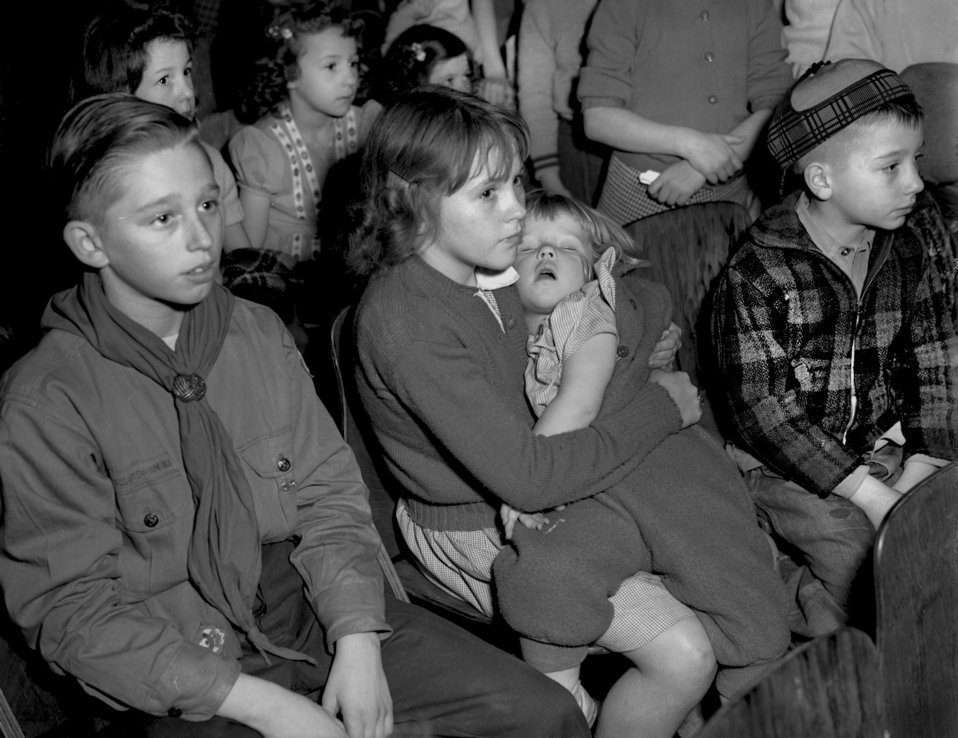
Doll Show Highland View School Oak Ridge

3235-4a DOE photo by Ed Westcott 1-10-1947 Oak Ridge Tennessee